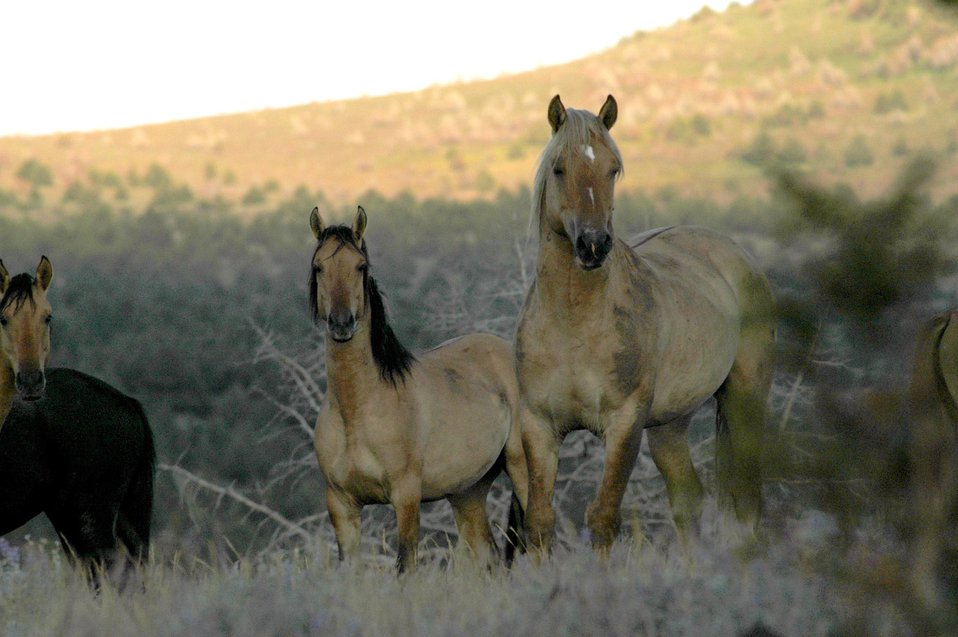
Kiger horses roam the plateaus of the Kiger Wildhorse Herd Management Area near Steens Mountain in Southeastern Oregon.